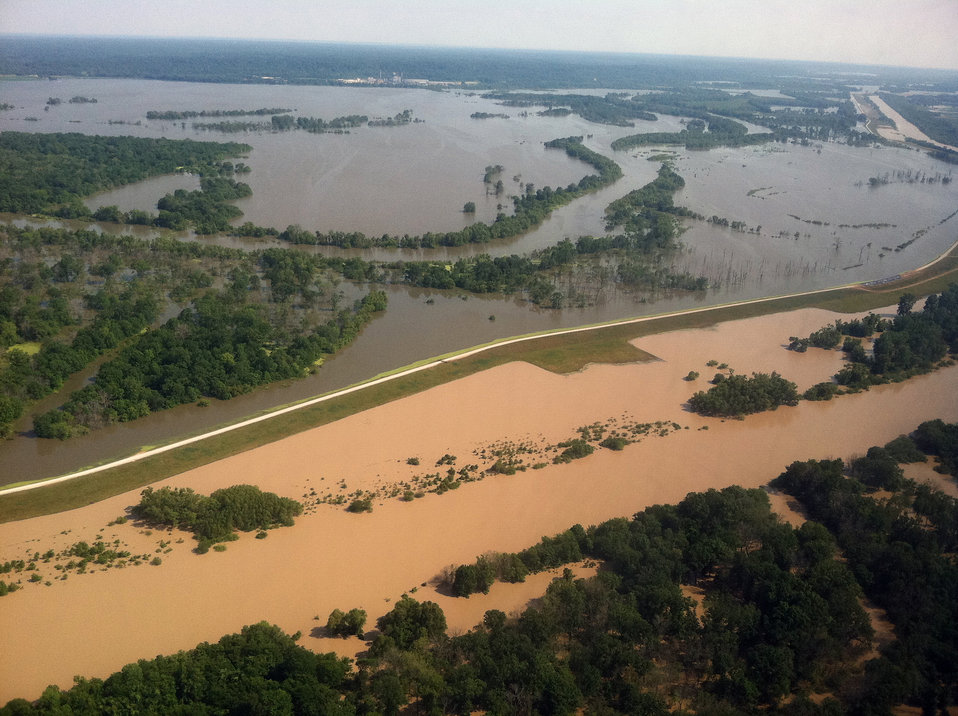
Aerial view on the flooding on the Mississipi River, on Thursday, May 19, 2011 from the MS side.